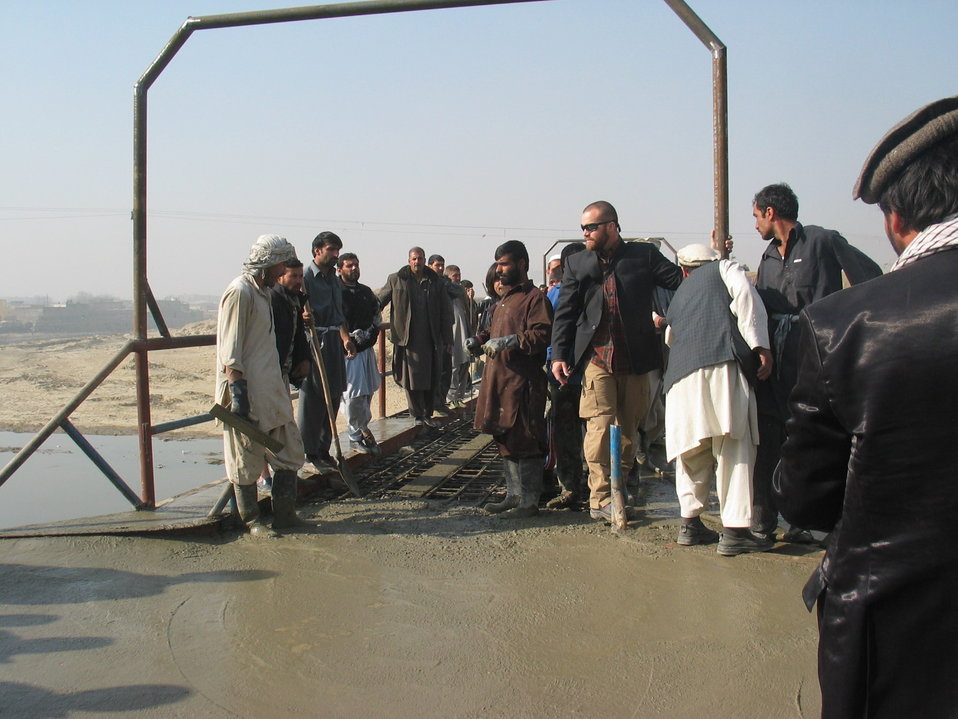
Kabul River Bridge Renovation, December 3, 2010